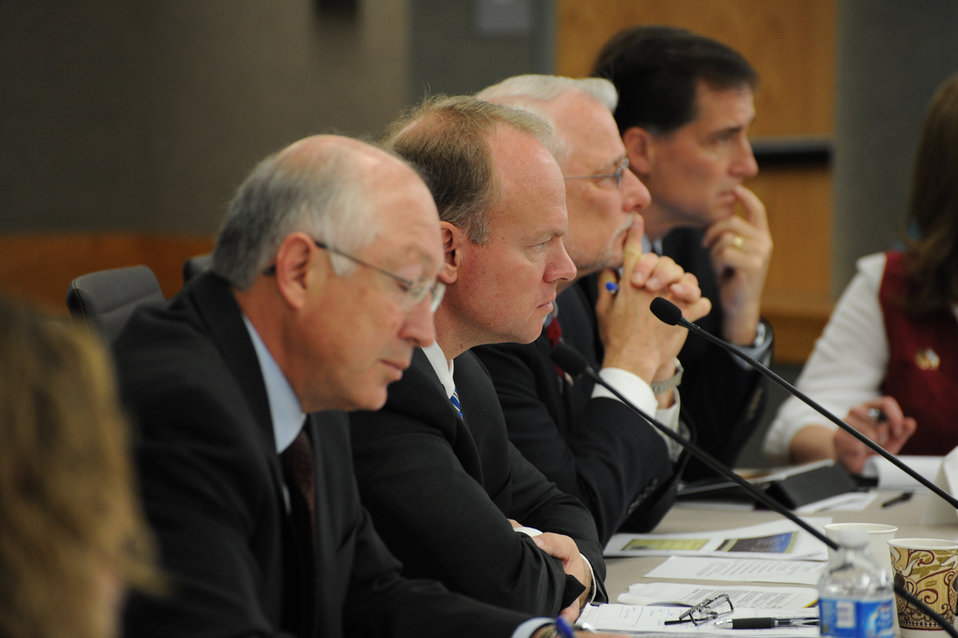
Wyoming - Sec. Salazar, Gov. Mead, and Dir. Dan Ashe

Secretary Salazar and Dan Ashe Attended a Sage Grouse Meeting in Wyoming